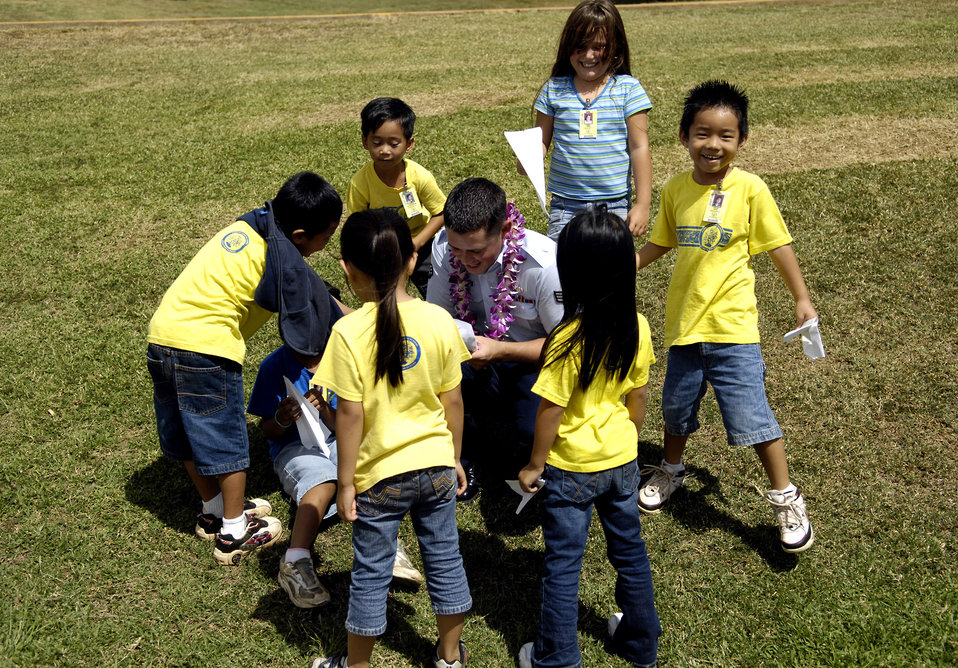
Learning to fly at Air Force Week Honolulu

Senior Airman Robert Bond helps children from August Ahrens Elementary School in Waipahu, Hawaii, make paper airplanes Sept. 10 during Air Force Week Honolulu. Approximately 800 Airmen from Hickam Air Force Base, Hawaii, spent their day at 80 local schools on the island of Oahu reading, playing and educating children about the Air Force. Airman Bond is from the 15th Airlift Wing Services Squadron.